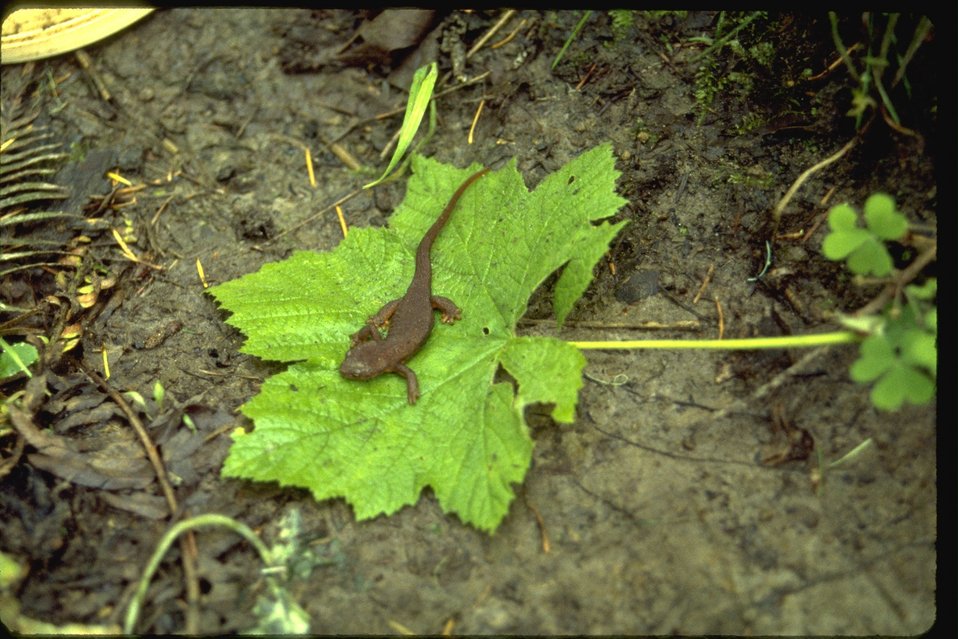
Field worker conducting an amphibian study: amphibian sitting on leaf.